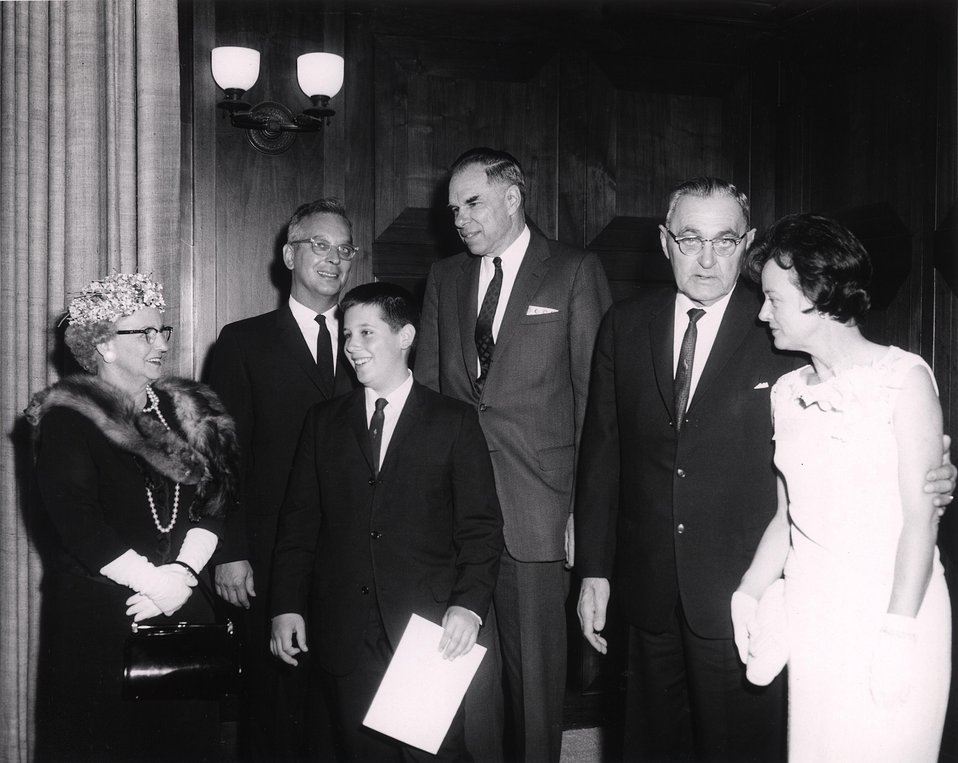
E. O . Lawrence Award Ceremony. National Academy of Sciences. April 29, 1965. Dr.Seaborg, Mr. Culler and Family.